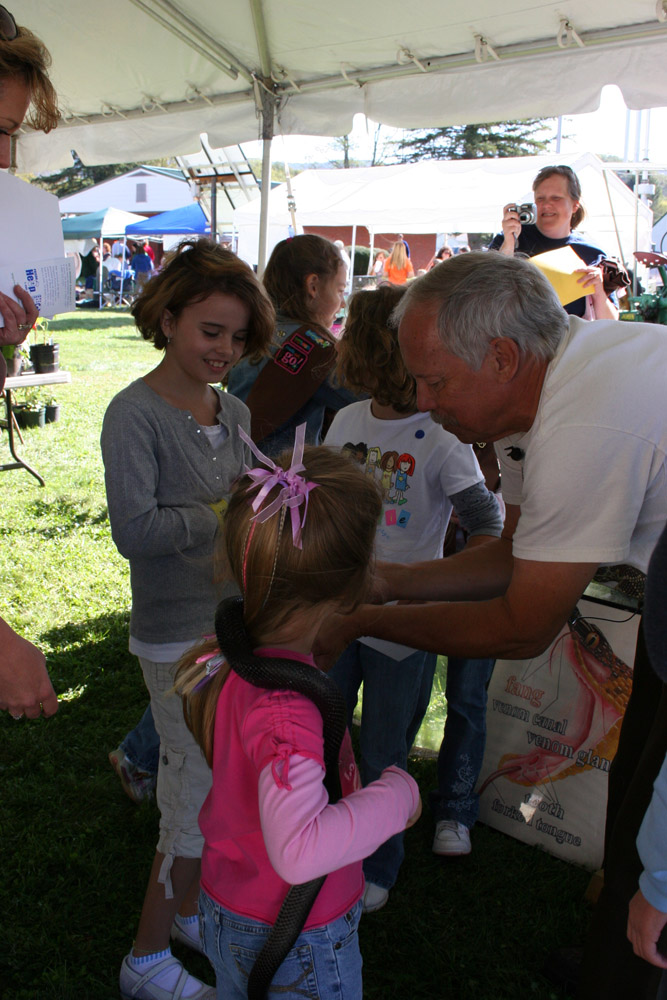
Freshwater Folk Festival

The 5th Annual Freshwater Folk Festival at White Sulphur Springs National Fish Hatchery in West Virginia.